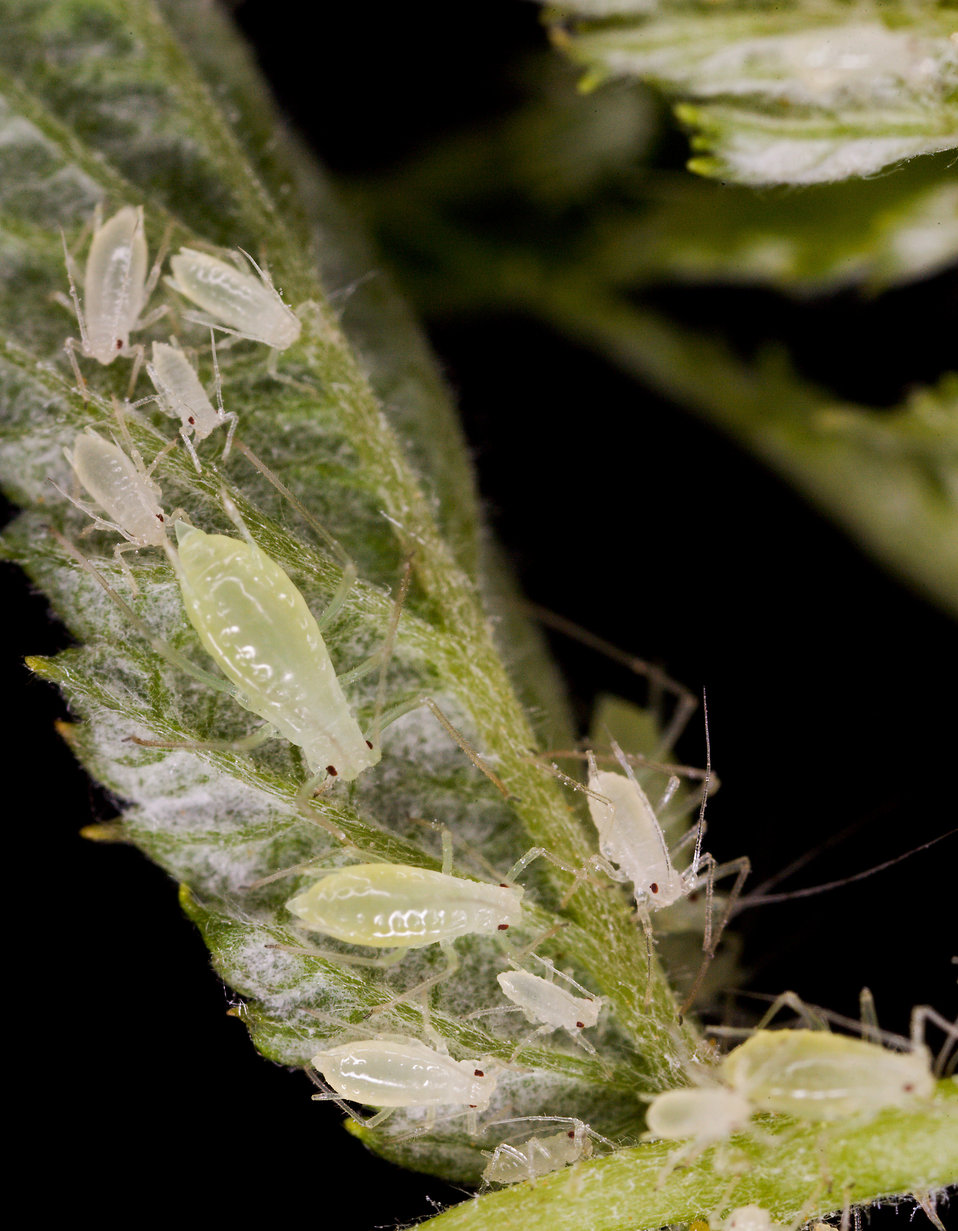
Raspberry aphids (Amphorophora agathonica) feeding on black raspberry plants on Aug. 29, 2007. This pest is a major culprit in spreading the black raspberry necrosis virus and raspberry mottle virus in North America.